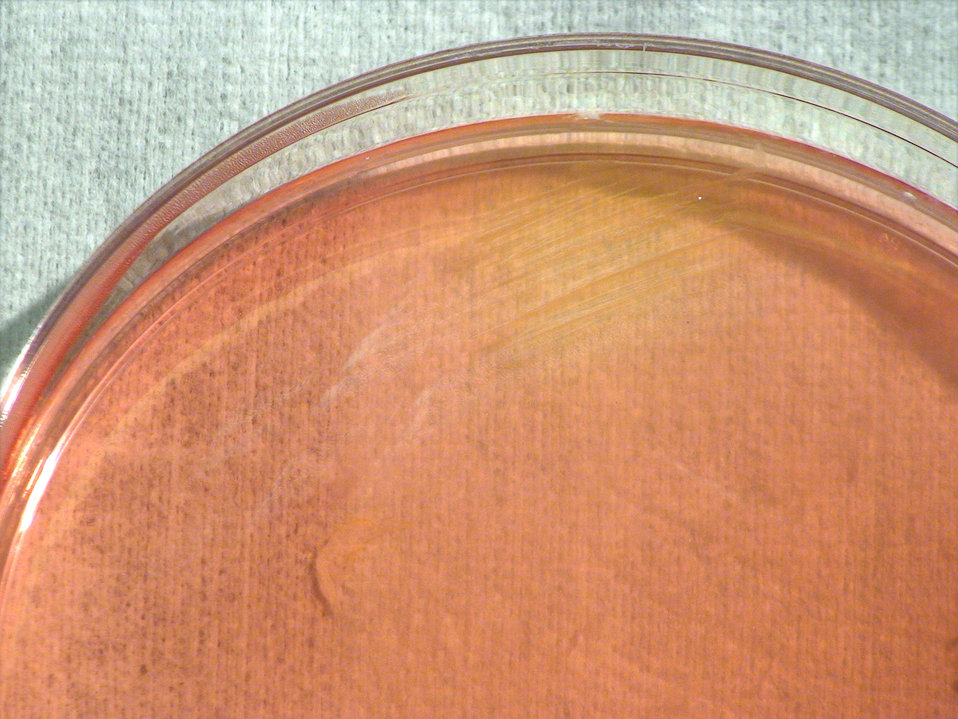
This photograph depicts an enlarged view of the colonial morphology displayed by Gram-negative Yersinia pestis bacteria, which was grown on a medium of MacConkey agar, for a 24 hour time period, and at a temperature of 37�C. See PHIL 12487, for the appearance of Y. pestis bacterial colonies grown on the same medium, and at the same temperature, but for twice the time period (48hr).